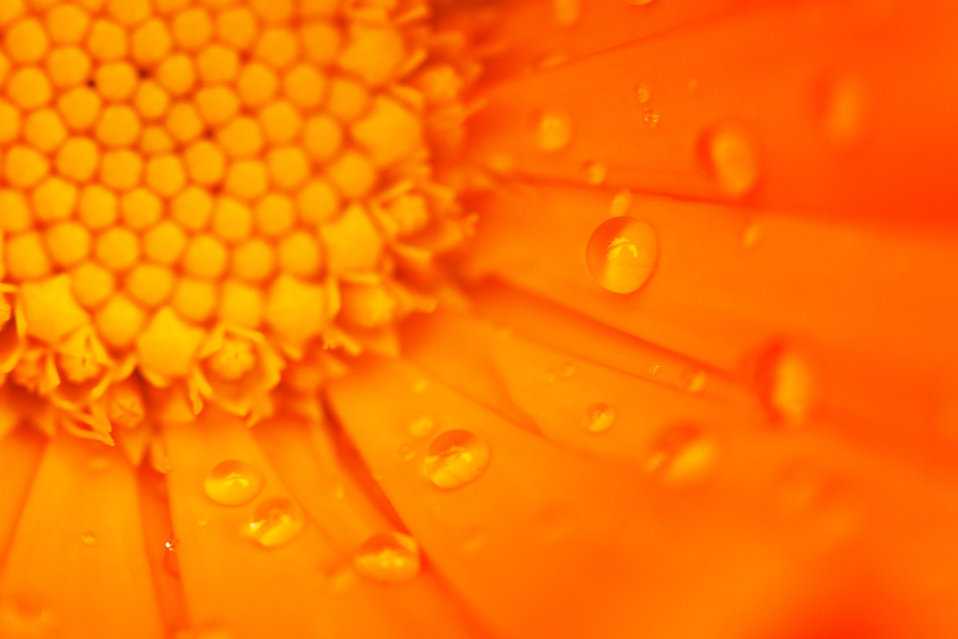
Water drops on flower

Water drops on orange flower.